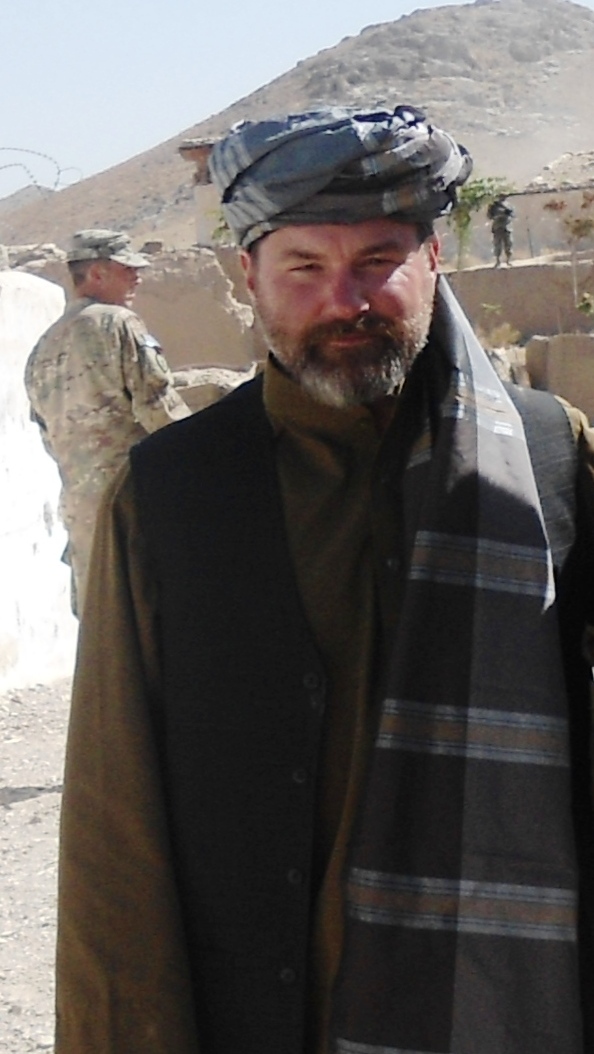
Maj. returns as mentor

Maj. John Matthews smiles for a portrait in traditional Afghan clothing, during one of his deployments to Afghanistan. Earning the trust of the local population was one of the first hurdles that Matthews had to overcome as he worked with the local peace and reintegration team. By wearing national dress, he helped locals see past glaring cultural differences and come up with creative and effective solutions.